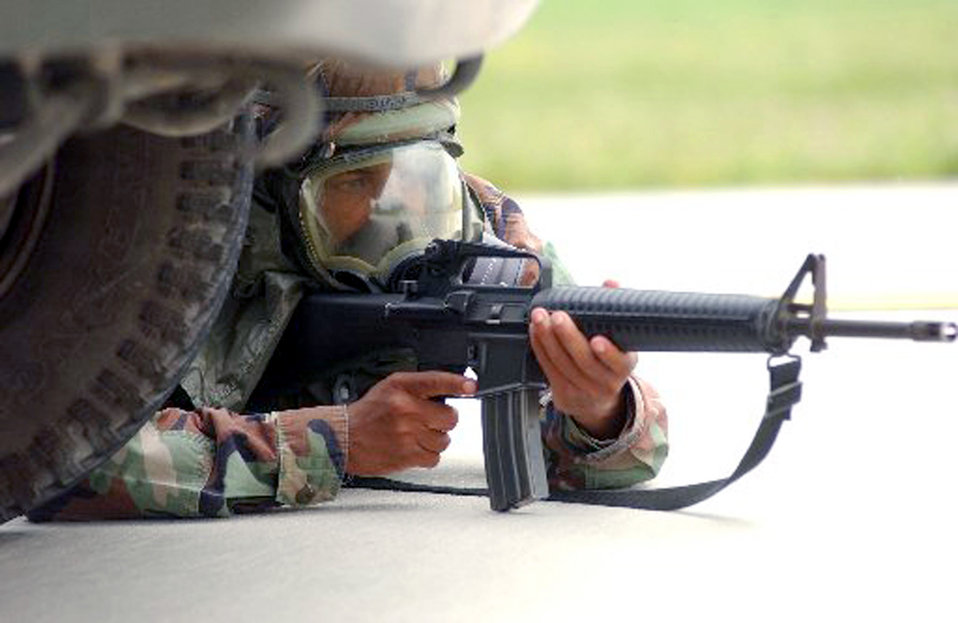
Take cover

INCIRLIK AIR BASE, Turkey -- Airman 1st Class Darnell Sharp provides cover fire during a security forces exercise here April 17. Sharp is assigned to the base's 39th Security Forces Squadron.